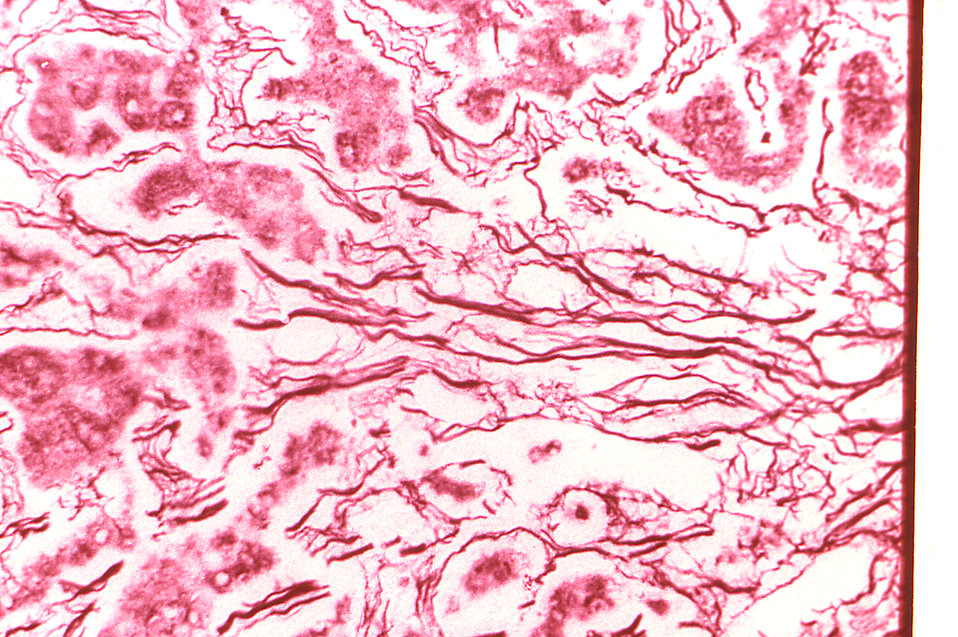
Under a high magnification of 400X, this Wilder's reticulin-stained photomicrograph depicts the cytoarchitectural changes found in a liver tissue specimen extracted from a Congo/Crimean hemorrhagic fever patient. This particular view reveals a 'thickening and a disassociation between the fibers of the reticular network."